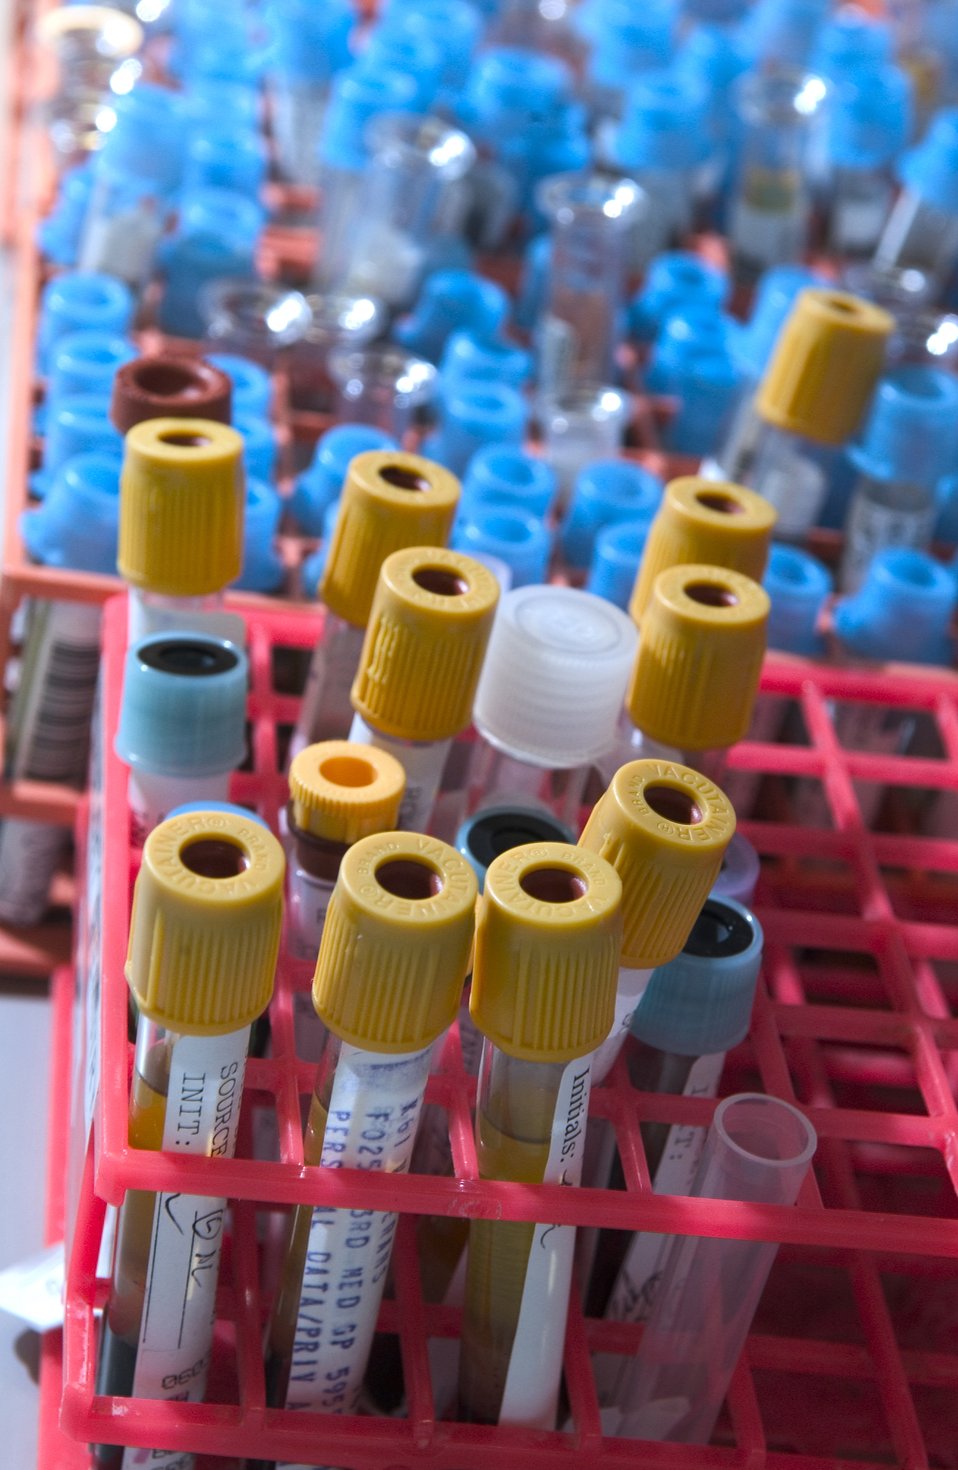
Under the scope

Vials of specimen samples sit in racks at Elmendorf Air Force Base, Alaska, on Wednesday, March 29, 2006.